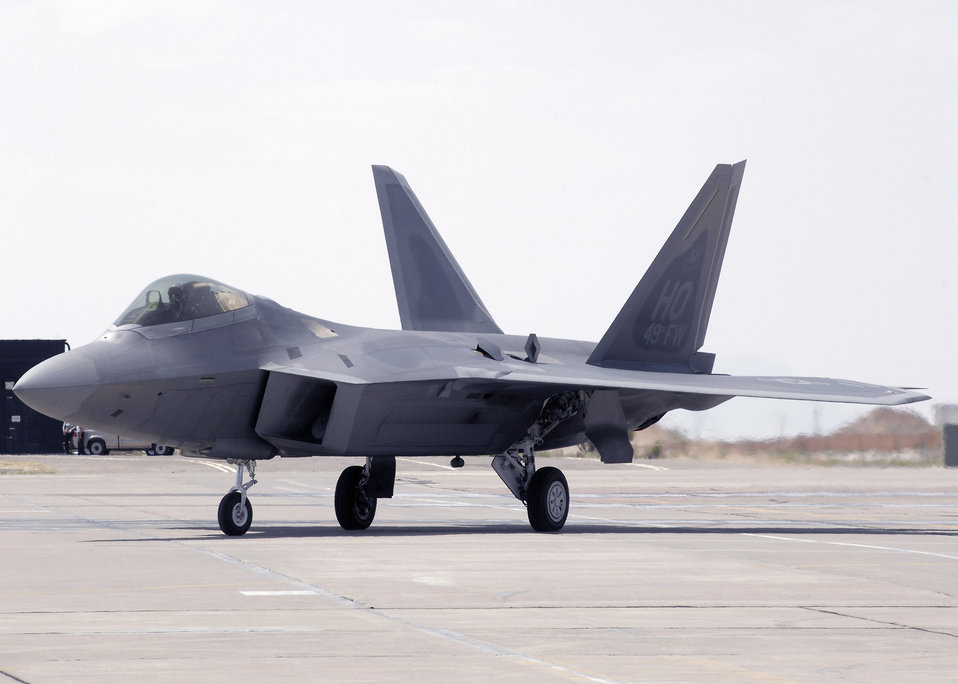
Raptors arrive at Holloman

An F-22 Raptor flown by Col. Jeff Harrigian arrives June 2 at Holloman Air Force Base, N.M., where it is now assigned. Colonel Harrigian is the 49th Fighter Wing commander.